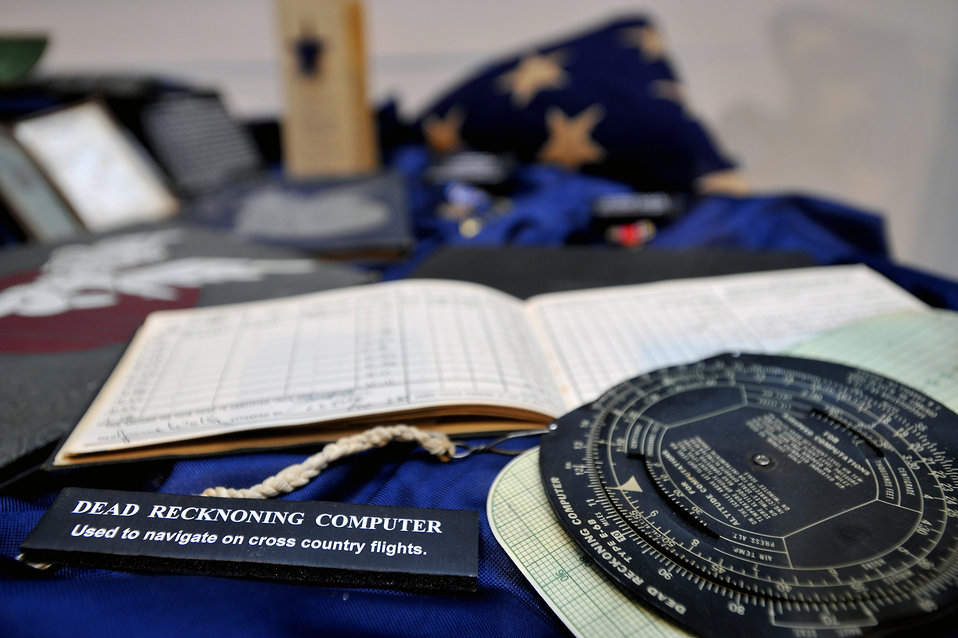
WASP exhibit opens in Arlington

Aviation tools used by World War II Women Airforce Service Pilots are on display as part of the